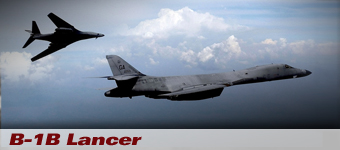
B-1 Lancer mission to Kuwait, history spotlight graphic